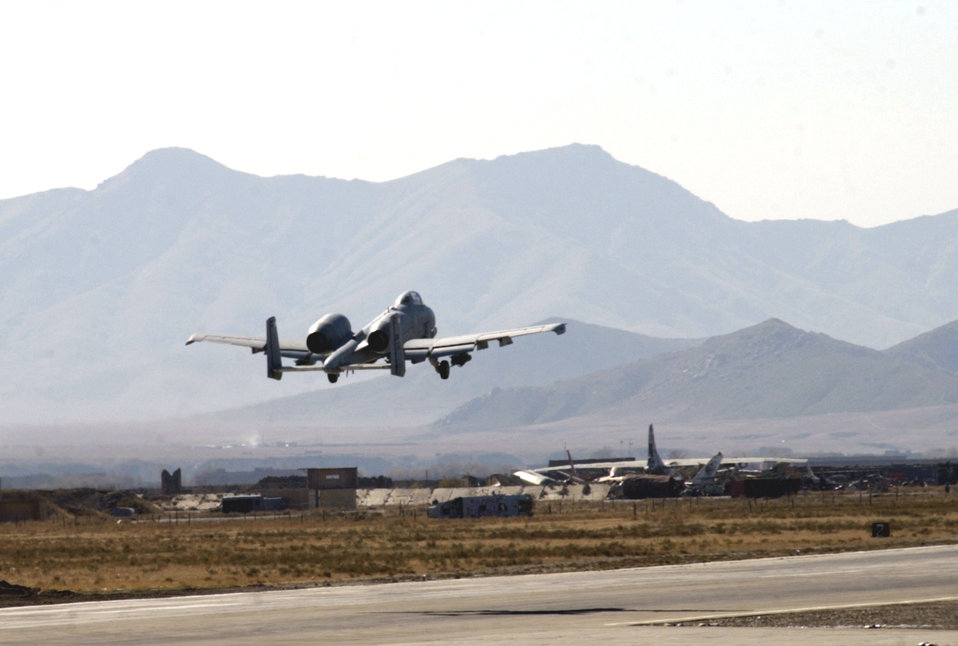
Close-air support

BAGRAM AIR BASE, Afghanistan (AFPN) -- An A-10 Thunderbolt II takes off here Nov. 17 to provide close-air support to the Army's 10th Mountain Division as they pursue Taliban and al-Qaida forces during Operation Mountain Resolve. The A-10 is from Davis-Monthan Air Force Base, Ariz.